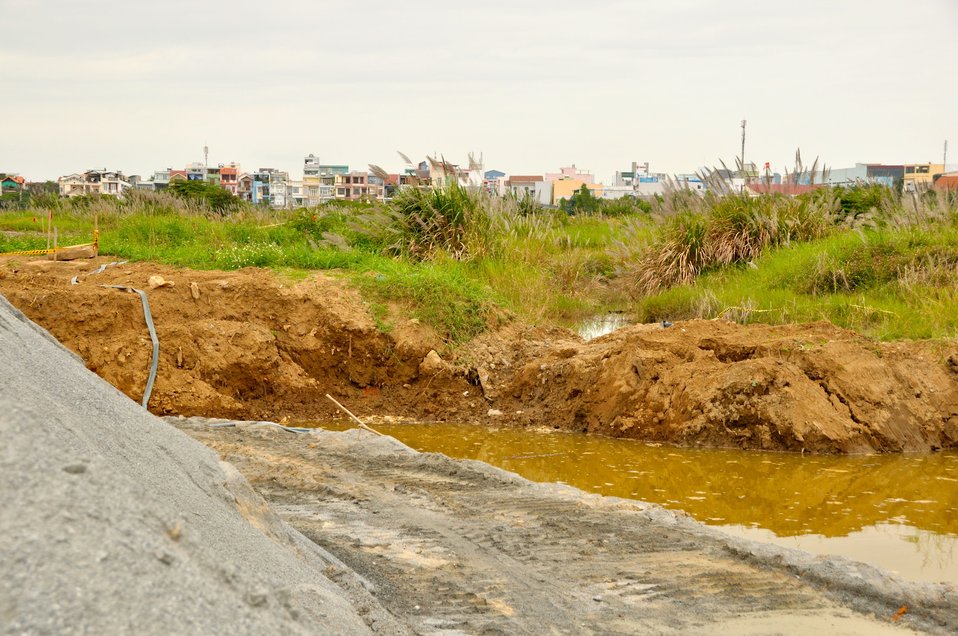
Site Preparation for Environmental Remediation of Dioxin Contamination at Danang Airport

Danang Airport, January 22, 2013